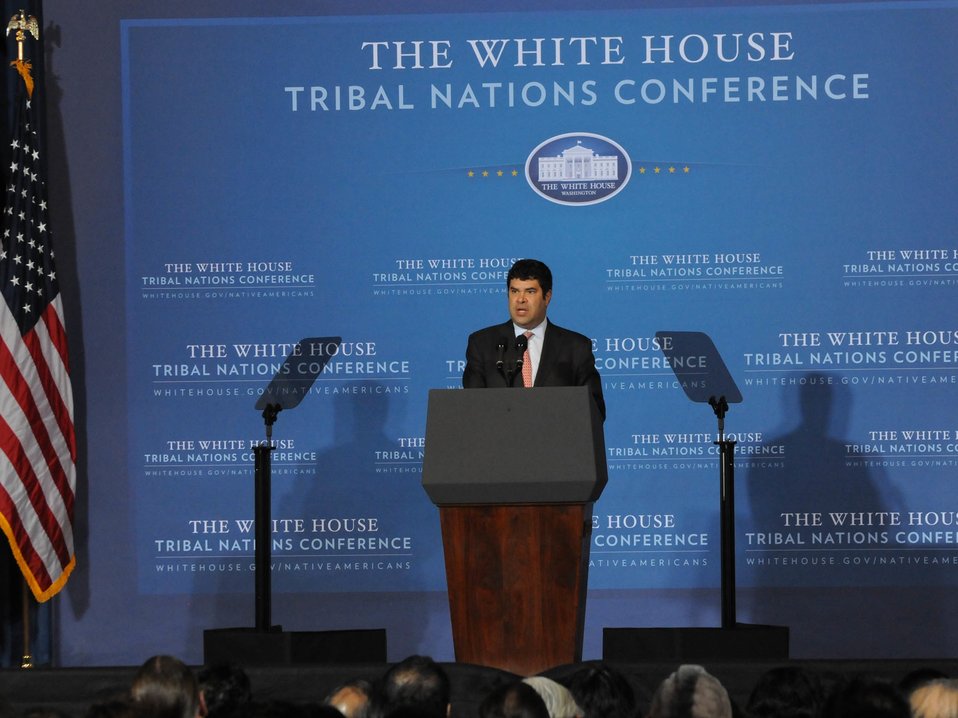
Deputy Secretary Neal Wolin at the White House Tribal Nations Conference

Deputy Secretary Neal Wolin announced key economic development initiatives at the White House Tribal Nations Conference at the Department of the Interior.